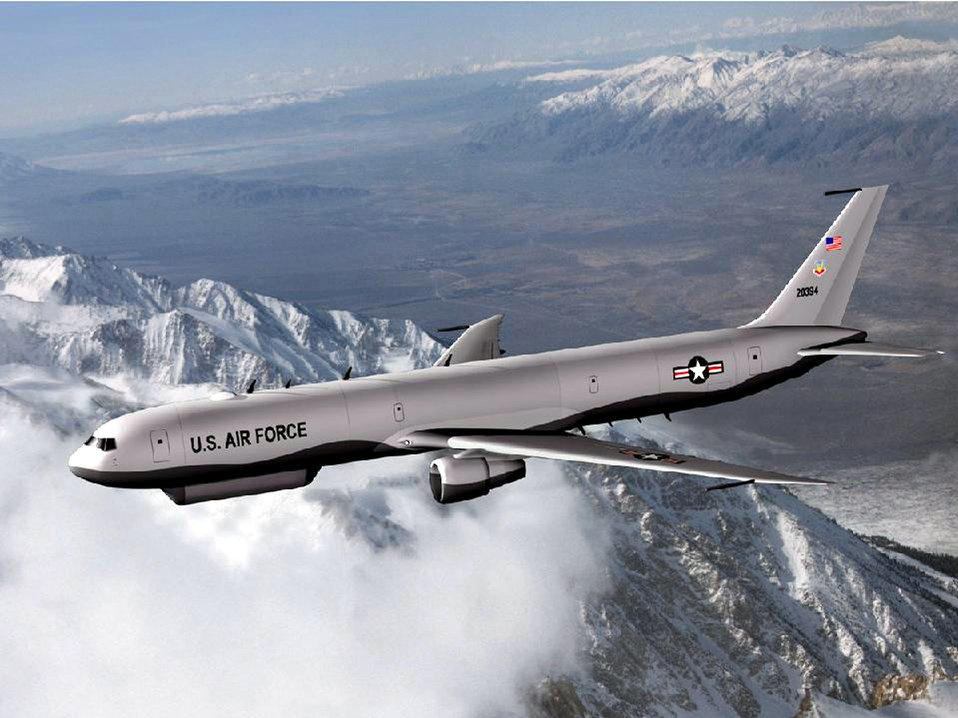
Air Force designates new aircraft

HANSCOM AIR FORCE BASE, Mass. -- An artist's rendition of the multisensor command and control aircraft in development featuring a ground surveillance, targeting, command and control, and battle management capability similar to E-8C Joint Surveillance Target Attack Radar System aircraft.